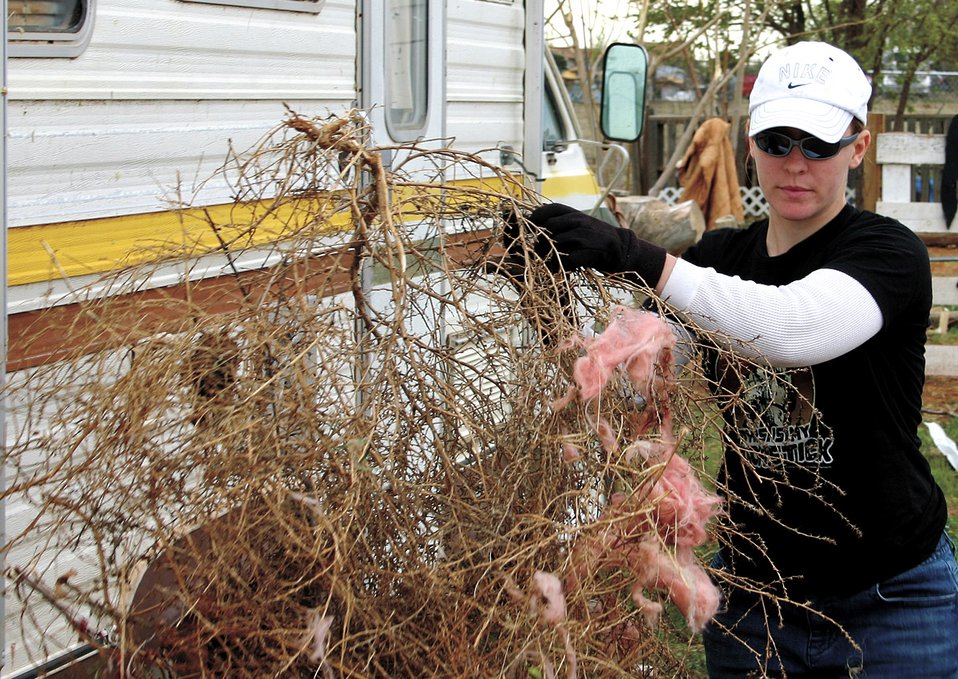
Cannon volunteers lend hands, hope in wake of disaster

Senior Airman Christine O'Donnell clears out tumbleweeds during the clean up efforts March 25 in Clovis, N.M. More than 500 volunteers from Cannon Air Force Base began restoring the host city located six miles east of the base, after tornadoes ripped through the town March 23. Airman O'Donnell is assigned to the 27th Aircraft Maintenance Squadron.